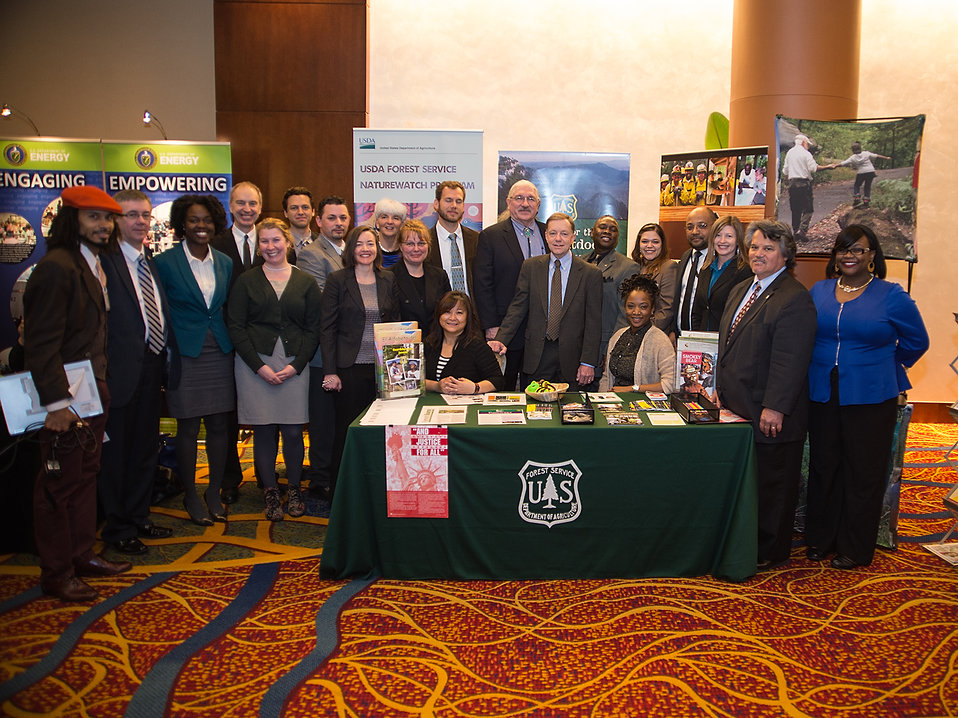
Deputy Under Secretary for Natural Resources and Environment Butch Blazer (9th from right) along with Tony Tooke, Associate Deputy Chief, National Forest System (8th from right); with USDA Forest Service employees at the 2014 Environmental Justice Conference in Washington, D.C.